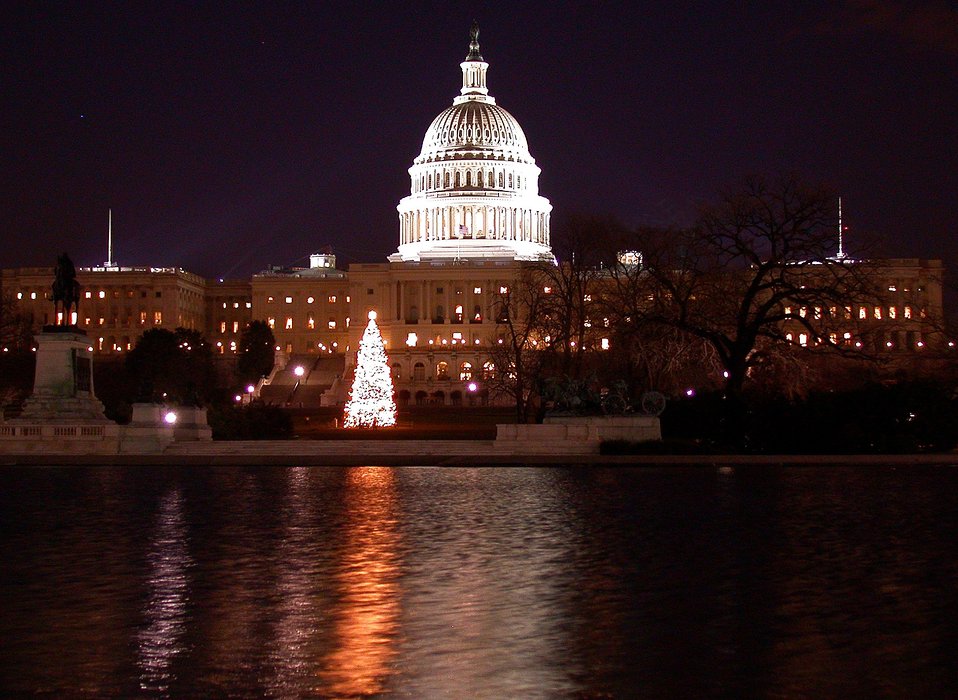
United States Capitol building.